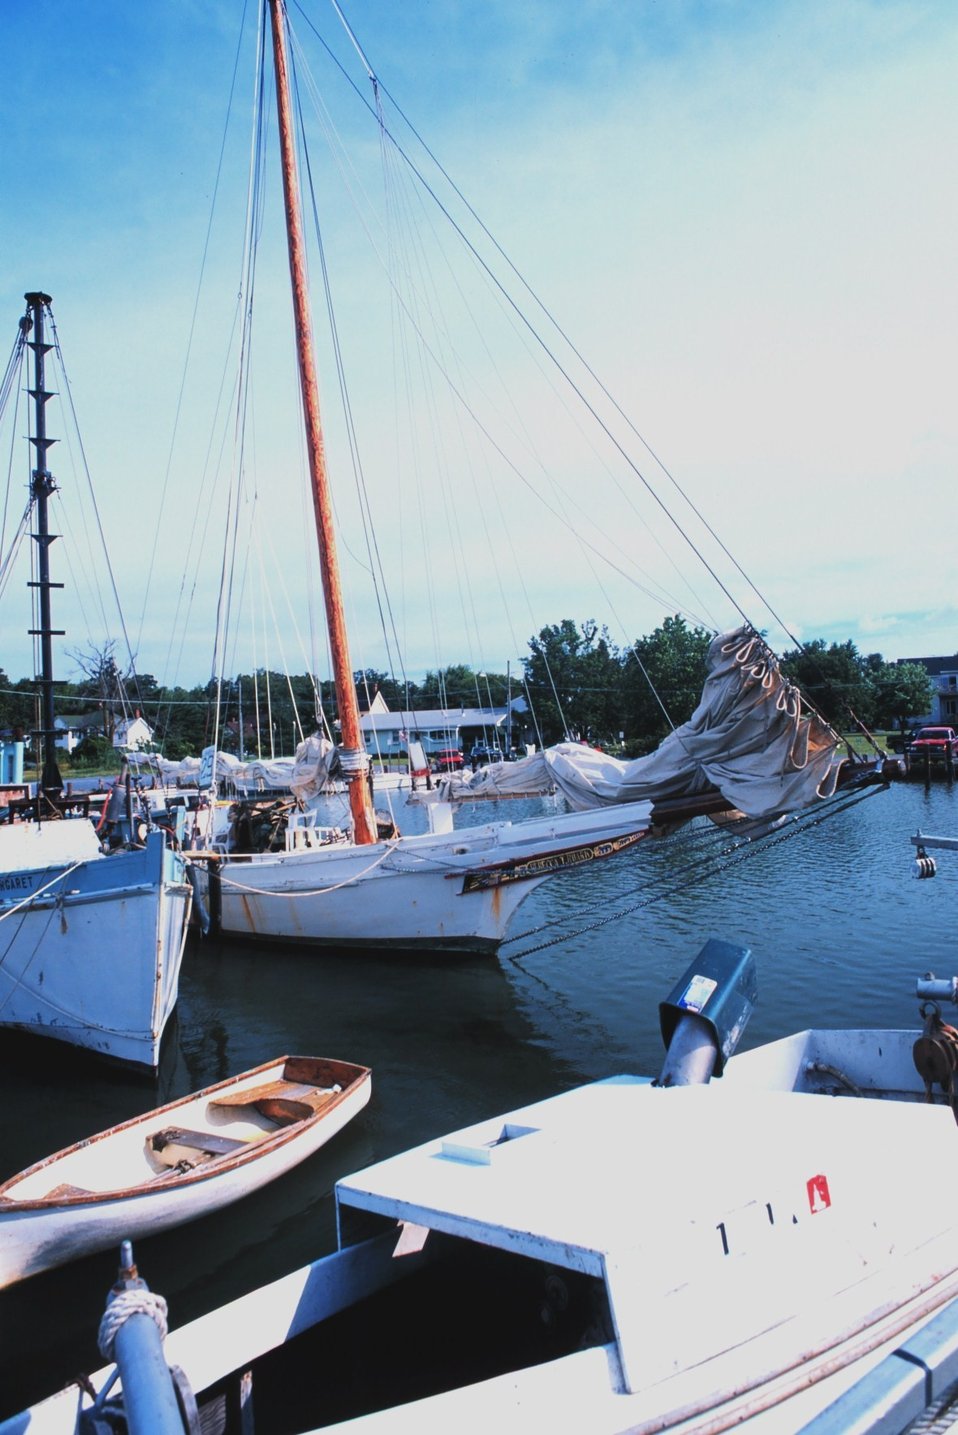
A Chesapeake Bay sailing oyster dredger at the dock.